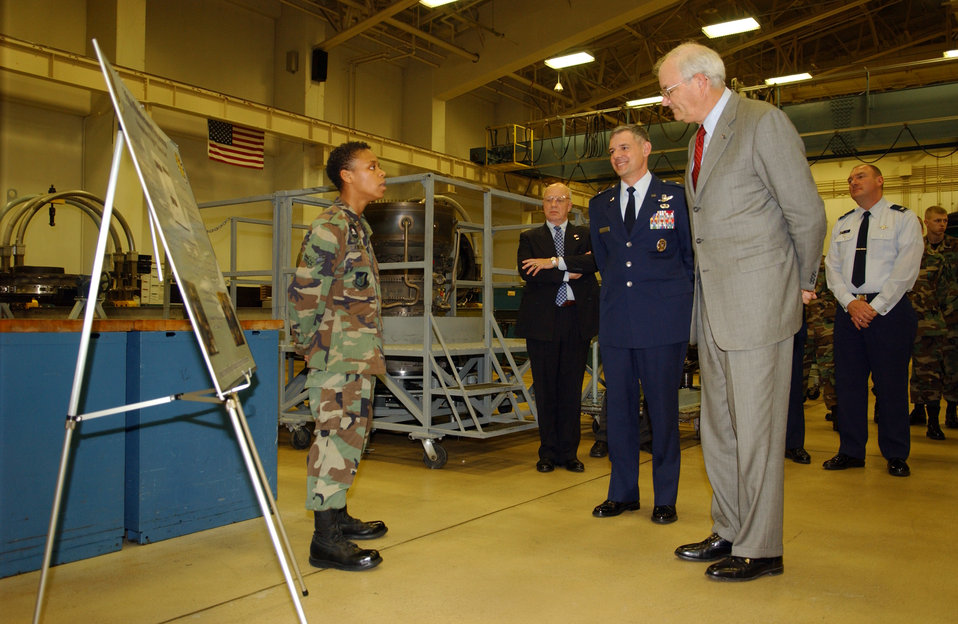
SECAF visits mainland Japan

Airman 1st Class Chakeyta Lawson briefs Secretary of the Air Force Michael W. Wynne and 35th Fighter Wing commander, Brig. Gen. Salvatore Angelella during the SECAF's visit to Misawa Air Base, Japan, on Saturday, March 25, 2006.